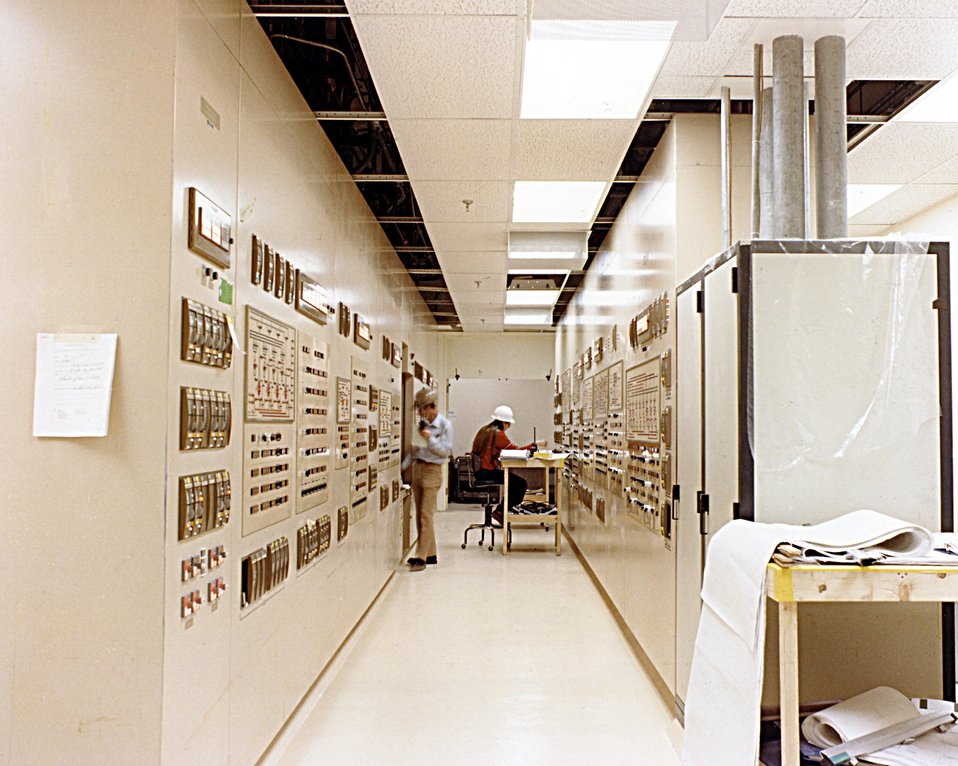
THE CONTROL ROOM OF BUILDING 371.

ALL PLUTONIUM OPERATIONS AT THE PLANT ARE CARRIED OUT IN HIGHLY SPECIALIZED FACILITIES, PROTECTING THE EMPLOYEES AND THE SURROUNDING POPULATION AND ENVIRONMENT. THE BUILDING IS DESIGNED TO WITHSTAND TORNADO, EARTHQUAKE, SNOW STORM, AND FLOOD DAMAGE. THE FACILITY IS ONE LARGE STRUCTURE DIVIDED INTO THREE AREAS: PLUTONIUM RECOVERY, WASTE TREATMENT, AND SUPPORT. PERSONNEL PROTECTION IS PROVIDED BY SPECIAL PROTECTION DEVICES, FOR EXAMPLE, PLUTONIUM IS HANDLED REMOTELY FROM INSTRUMENTED CONTROL ROOMS, IN ED GLOVEBOXES, AND IN CONCRETE VAULT CANYONS. THIS FACILITY IS CURRENTLY BEING REEVALUATED TO DEVELOP A REVISED AND UPGRADED PROCESS.